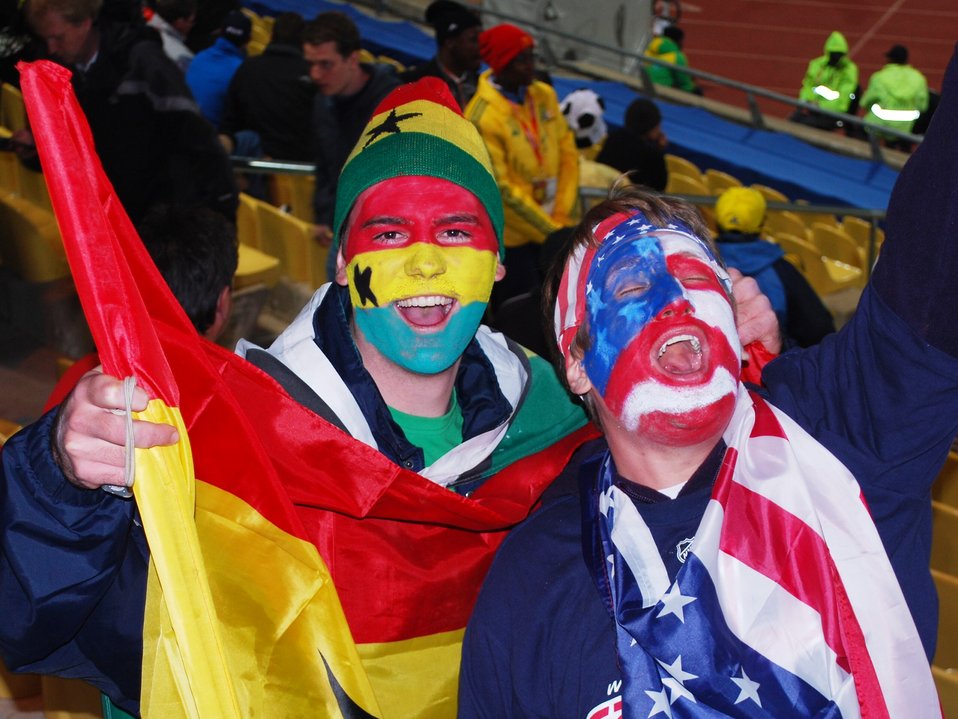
Ghanaian and American fans cheer for their respective teams during the FIFA 2010 World Cup soccer match between the United States and Ghana on June 26, 2010, at the Royal Bafokeng stadium in Rustenburg, South Africa.